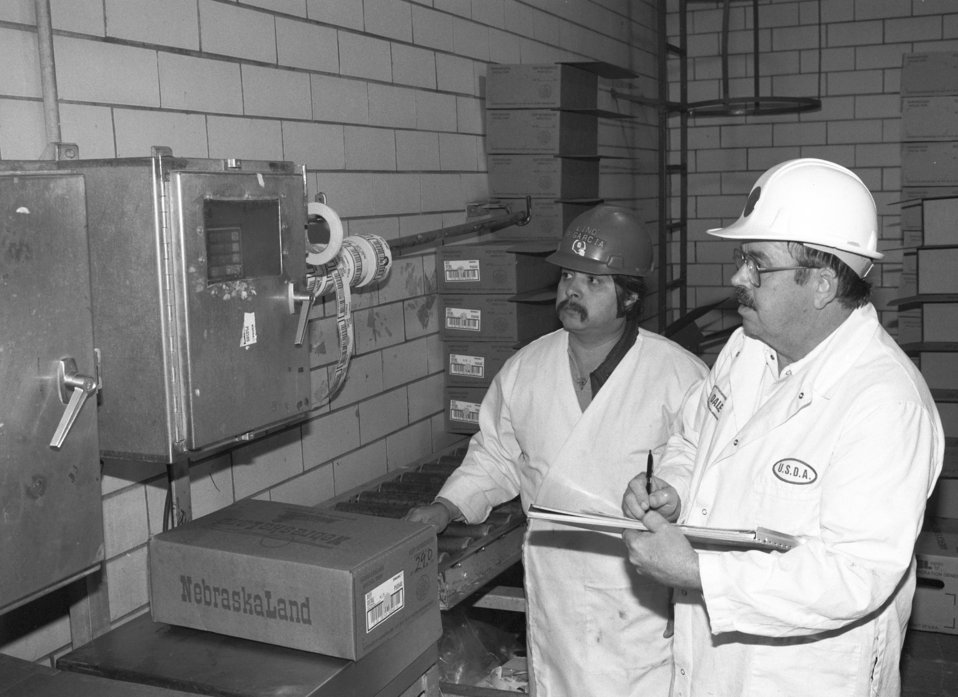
U.S. Department of Agriculture (USDA) Food Safety Inspection Service (FSIS) inspectors inspect beef using a Streamline Inspection System (SIS) at a processing plant in Plainview, TX on January 22, 1991.